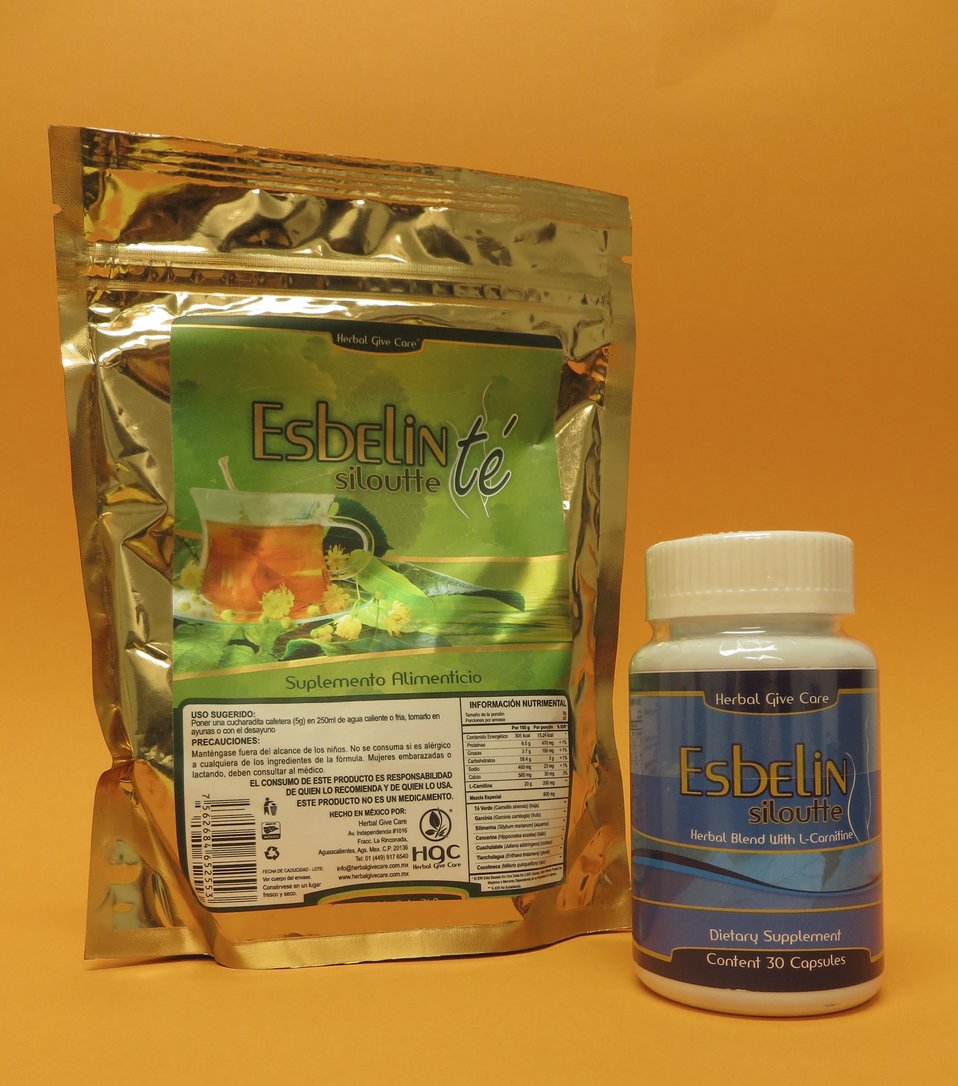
Esbelin Silouttte Te and Esbelin Siloutte Vitamin Supplement

July 23, 2013 - The FDA is advising consumers not to purchase or use 'Esbelin Silouttte Te' and 'Esbelin Siloutte Vitamin Supplement,' products promoted and sold for weight loss. The products were found to contain undeclared sibutramine, n-desmethylsibutramine, and n-di-desmethylsibutramine. For more information, go to www.fda.gov/Safety/Recalls/ucm361950.htm.

And read this Consumer Update: Beware of Fraudulent ‘Dietary Supplements’